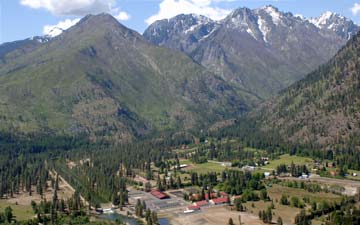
Mountains surrounding Leavenworth National Fish Hatchery

Leavenworth National Fish Hatchery is nestled at the base of these mountains in north central Washington. Leavenworth NFH serves as the administrative headquarters of the Leavenworth Fish Hatchery Complex, which consists of three fish hatcheries in this area.